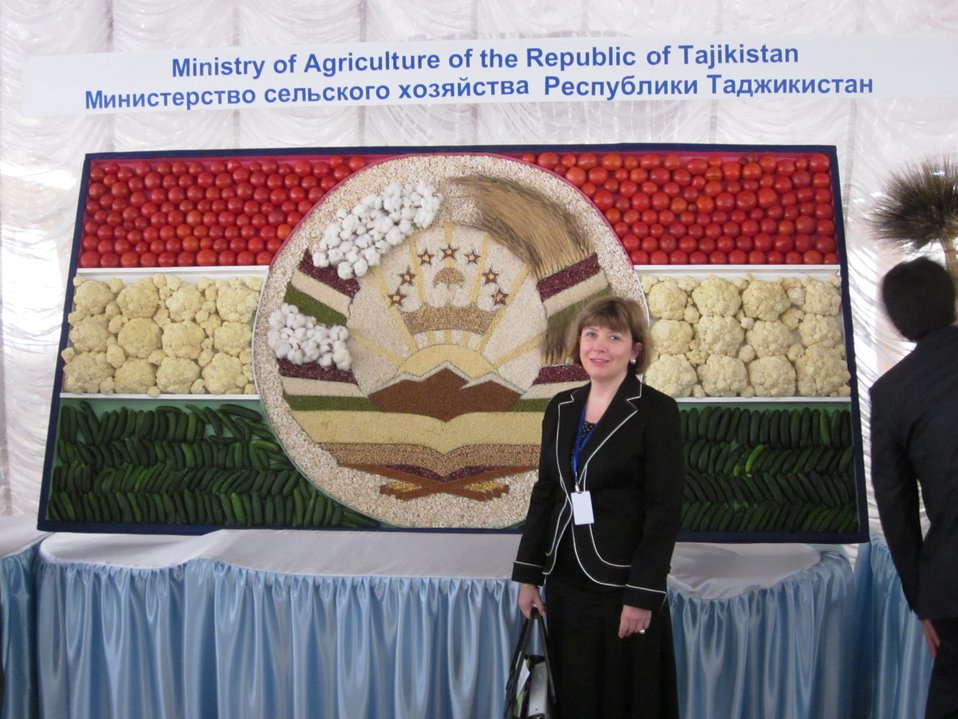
Senior Advisor Madelyn Spirnak Admires Tajik Produce

Senior Advisor for Biotechnology in the Bureau of Economic and Business Affairs Madelyn Spirnak admires Tajik produce in Dushanbe, Tajikistan, on June 8, 2010.